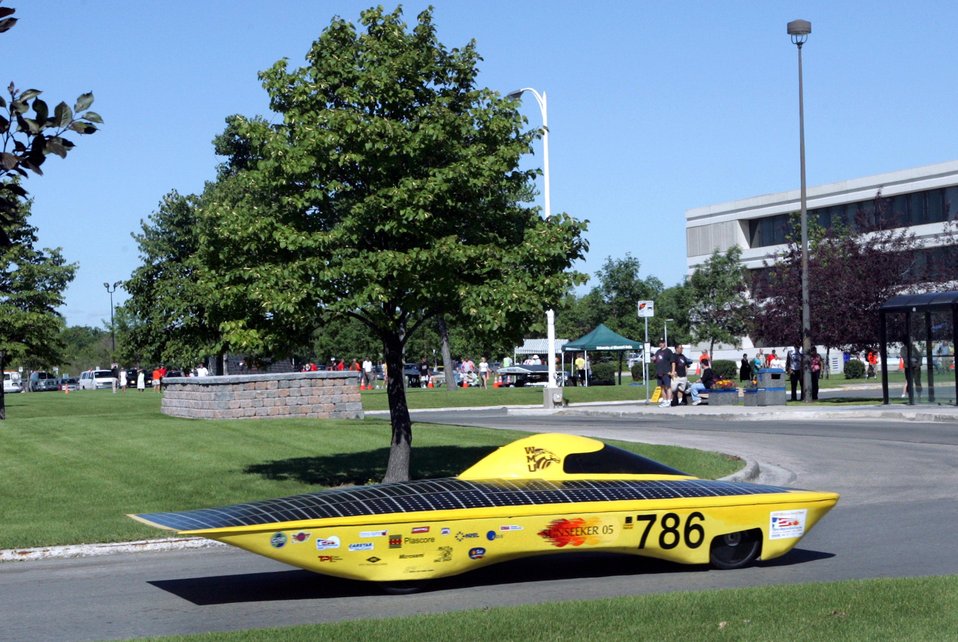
WESTERN MICHIGAN UNIVERSITY ARRIVES AT THE RED RIVER COLLEGE CHECKPOINT IN WINNIPEG, MANITOBA, CANADA, DURING THE NORTH AMERICAN SOLAR CHALLENGE ON JULY 22, 2005.

THE 2005 NORTH AMERICAN SOLAR CHALLENGE (ASC) WAS A CROSS COUNTRY SOLAR RACE THAT WAS HELD JULY 17 TO 27, 2005. THE RACE STARTED IN AUSTIN, TEXAS AND FOLLOWED U.S. ROUTE 75 AND THE TRANS-CANADA HIGHWAY (HWY 1) TO CALGARY, ALBERTA, CANADA. TEAMS FACED VARIED CLIMATES, TOPOGRAPHY AND ROAD CONDITIONS. THE FIRST TIME THE WORLD'S LONGEST SOLAR CAR RACE WENT THROUGH THE U.S. AND CANADA